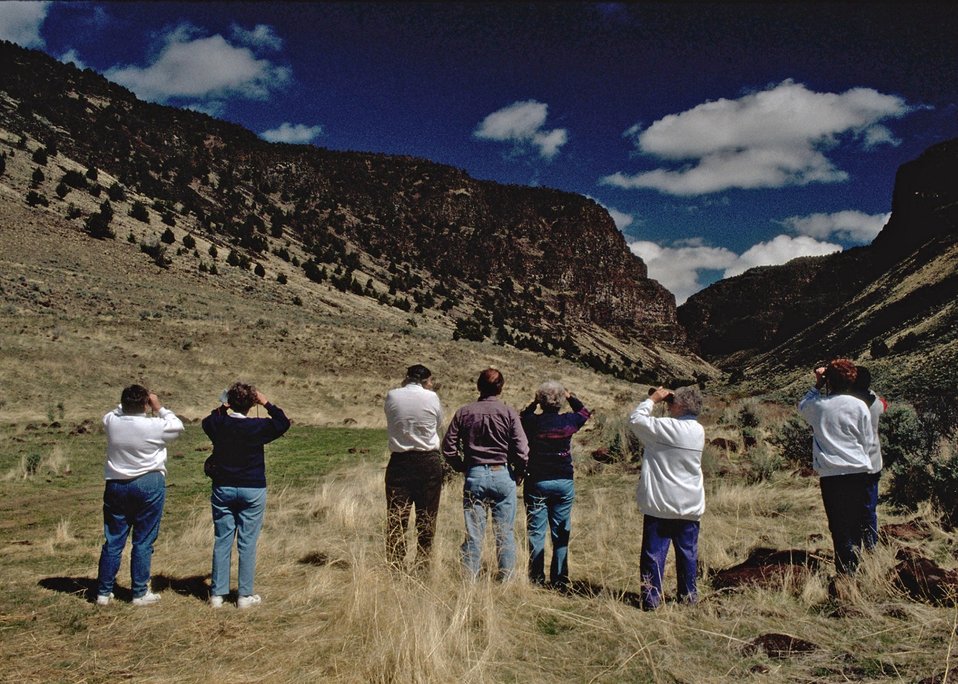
Viewing Bighorn Sheep in Home Creek Canyon at Steens Mountain in Southeastern Oregon.